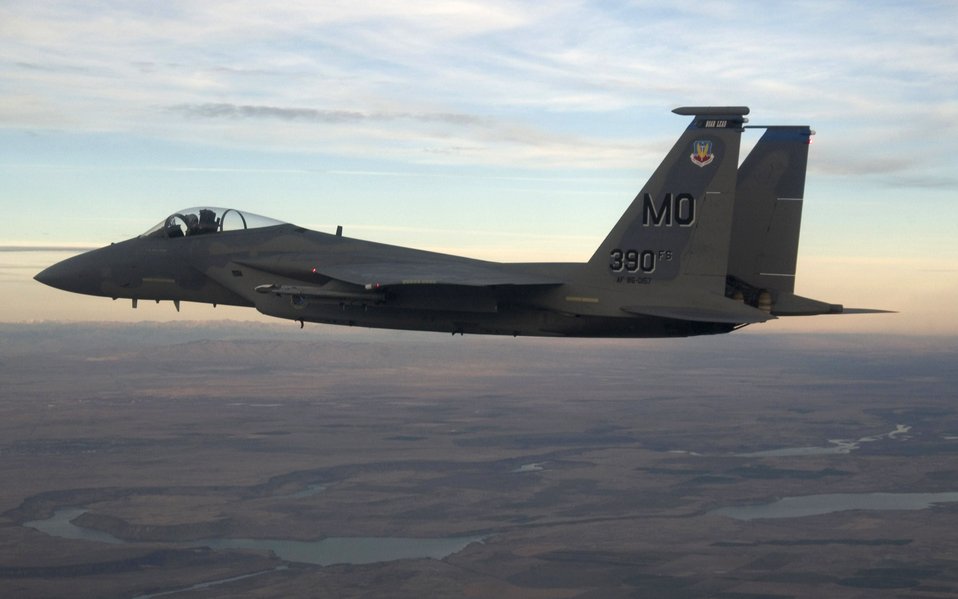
Flying over Idaho

An F-15 Eagle from the 366th Fighter Wing flies high above the Snake River Canyon near Mountain Home Air Force Base, Idaho, Nov. 1. The 366th Fighter Wing began the first phase of its F-16 Fighting Falcon drawdown when five jets departed the base Nov. 2. The departure is part of the wing's realignment.